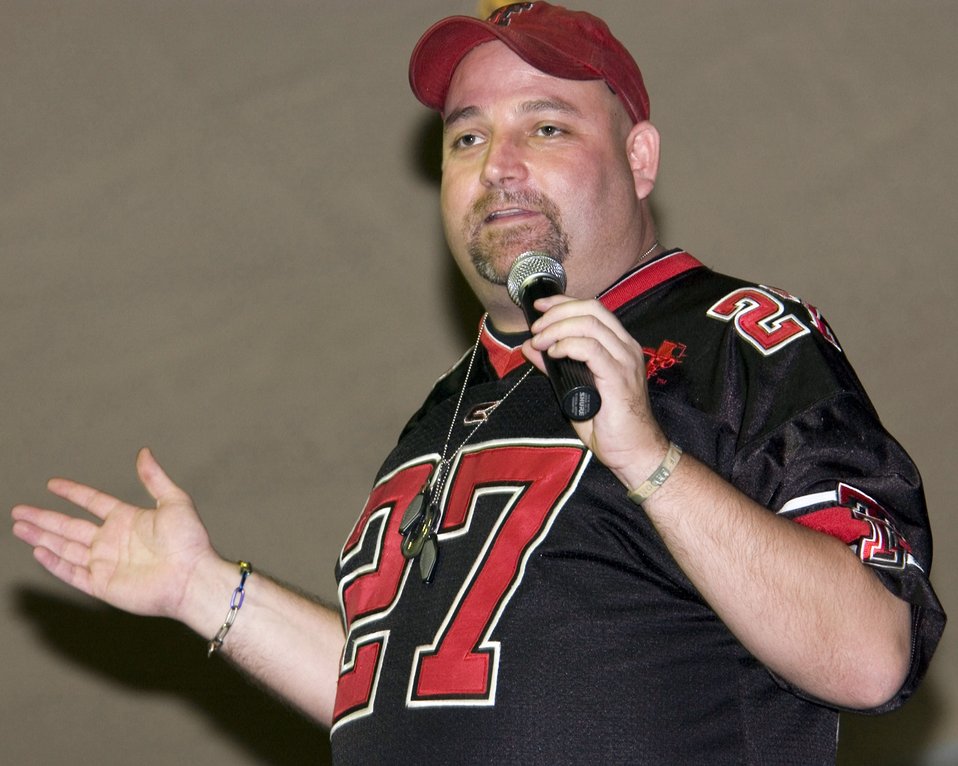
Insomniacs invade Manas

MANAS AIR BASE, Kyrgyzstan -- Comedian Scott Kennedy entertains troops here Sept 14.